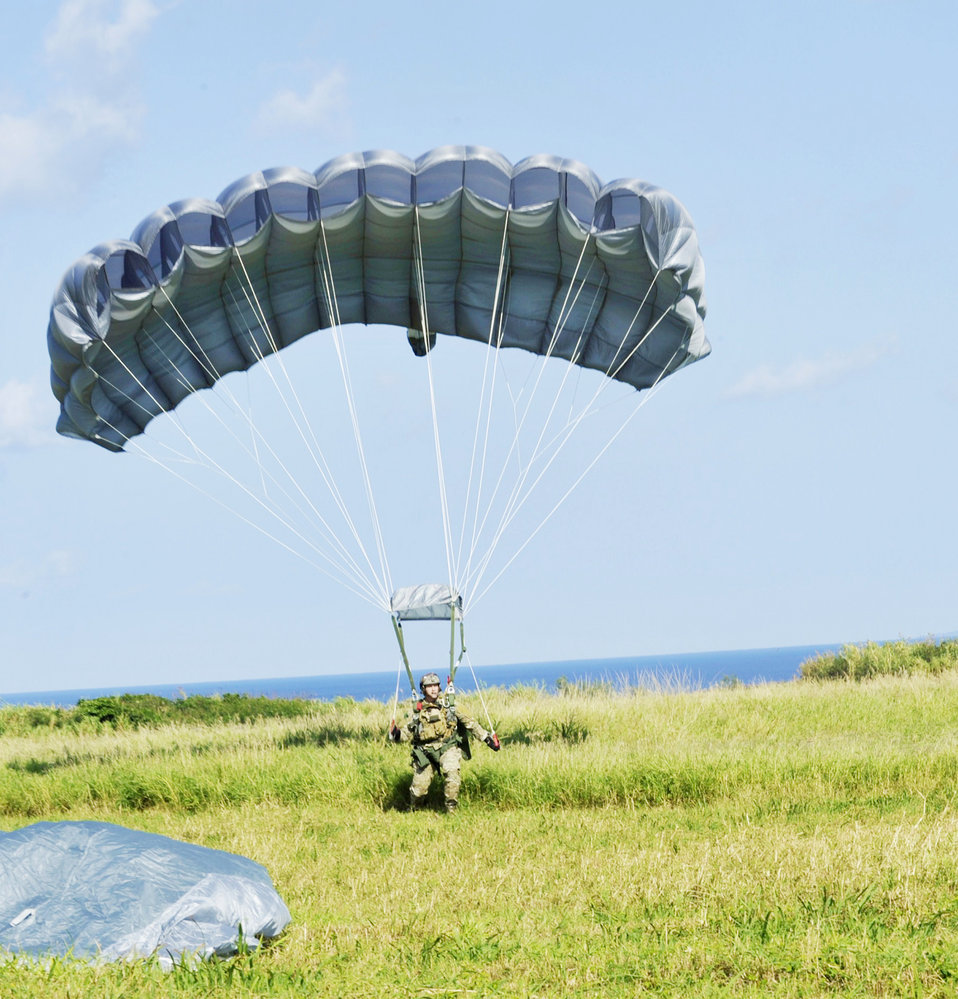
Kadena Airmen jump over le Shima Island

Master Sgt. Jeremiah Coomer lands on Ie Shima Island, Japan, after a high-altitude low-opening jump Dec. 23, 2009. Sergeant Coomer is with the 320th Special Tactics Squadron at Kadena Air Base, Japan. The jump was part of routine training for the 320th STS and the 31st Rescue Squadron.